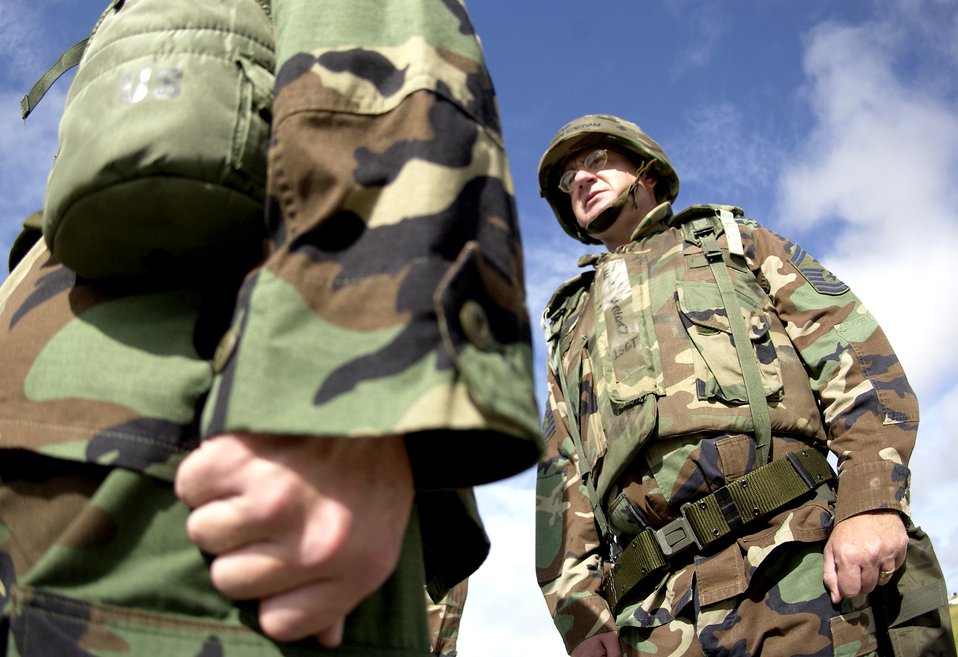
Deployment check

ANDERSEN AIR FORCE BASE, Guam (AFPN) -- Senior Master Sergeant Anthony Cardan inspects a Airmen during an open ranks inspection. The 36th Civil Engineer Squadron holds regular inspections to ensure troops have all of their necessary equipment for deployment.